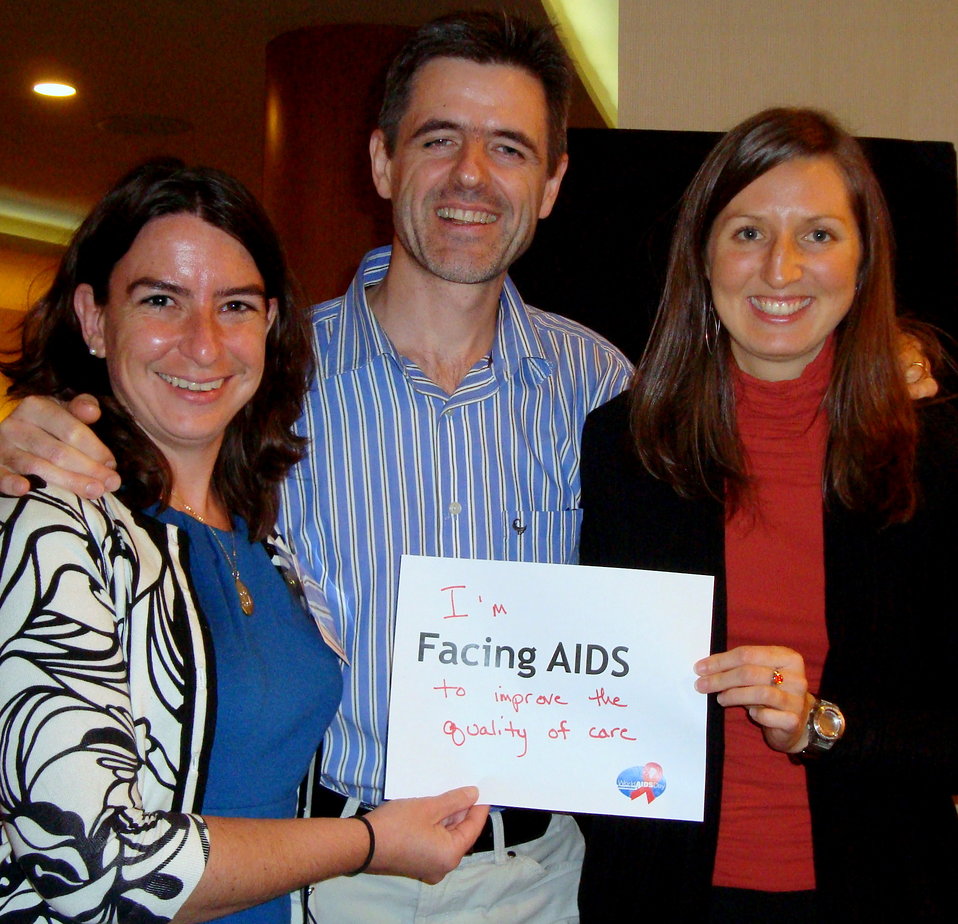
FacingAIDSCampaign 005